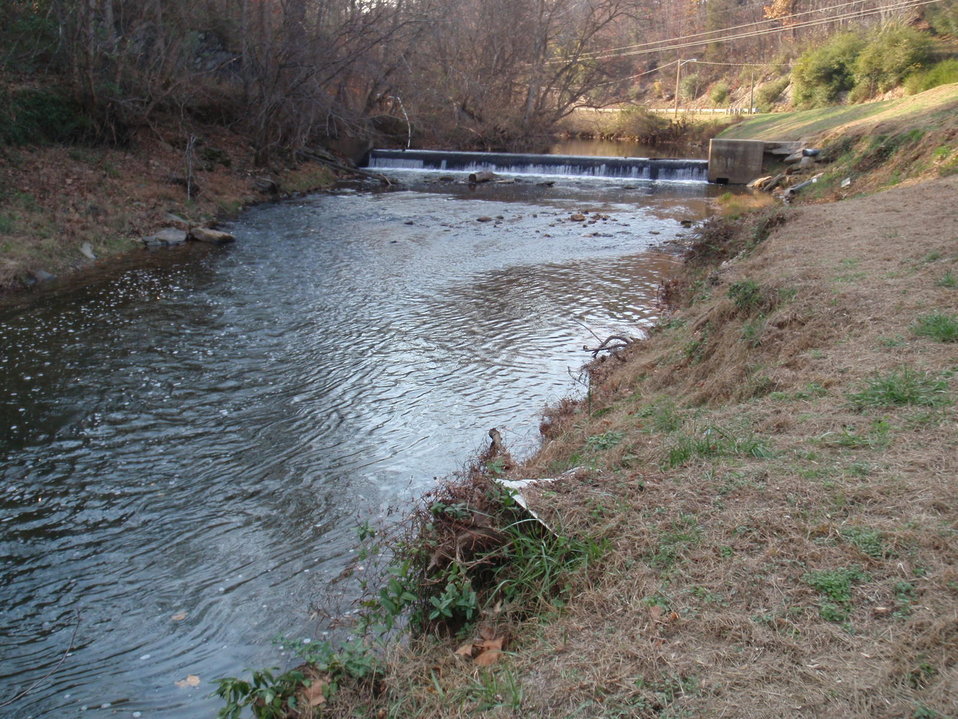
Looking Upstream at Veterans Memorial Park Dam

View looking upstream at Veterans Memorial Park Dam. The Virginia PFW is proposing to remove the dam to restore habitat for the federally endangered Roanoke logperch.